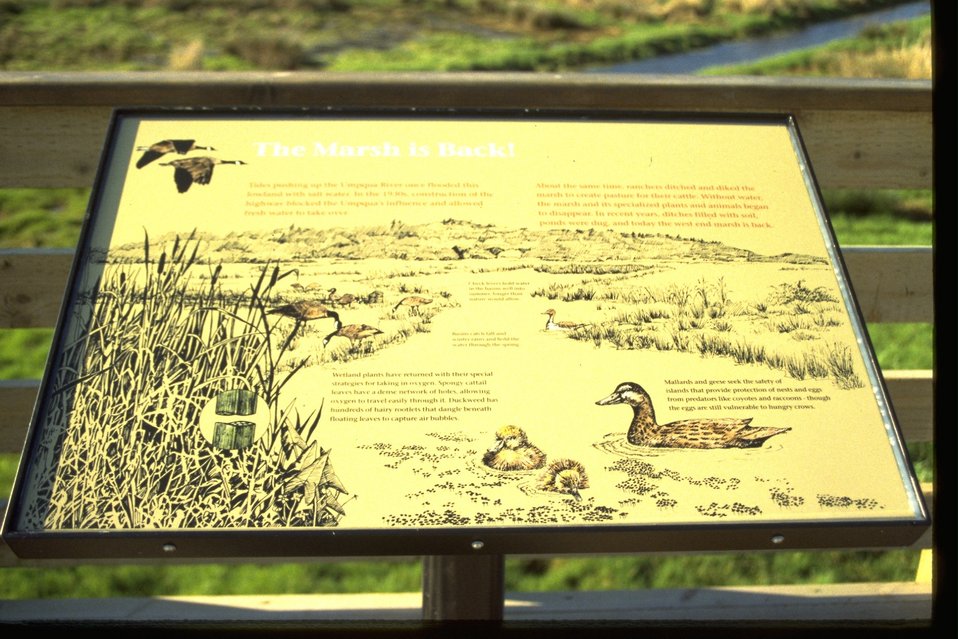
Dean Creek Wetland interpretetive panel.